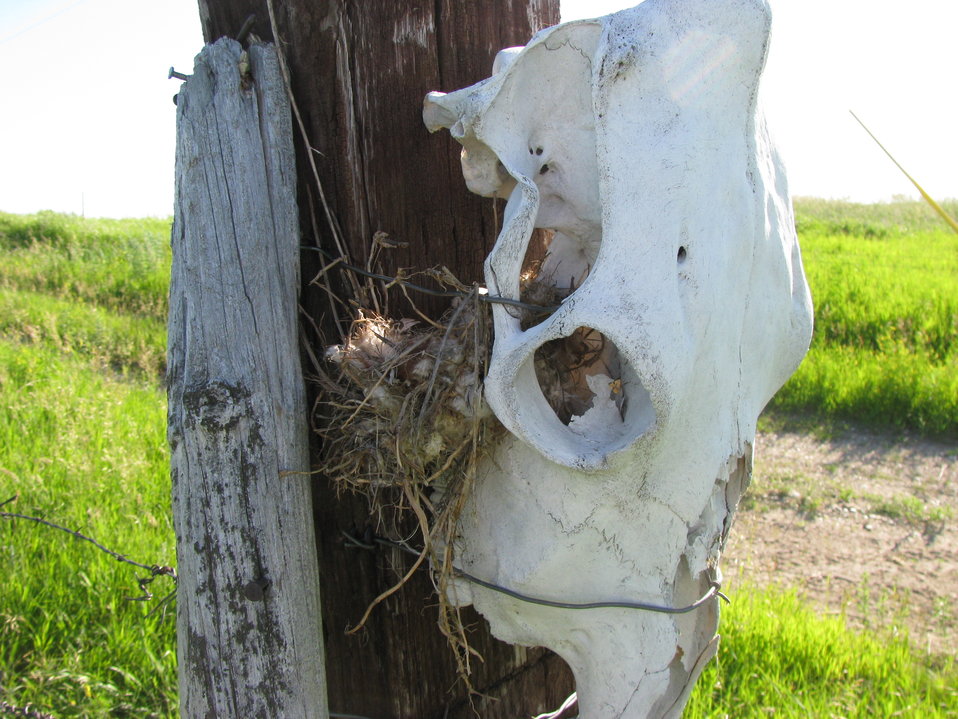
Western Kingbird Nest

This nest was tucked into a very unique spot!